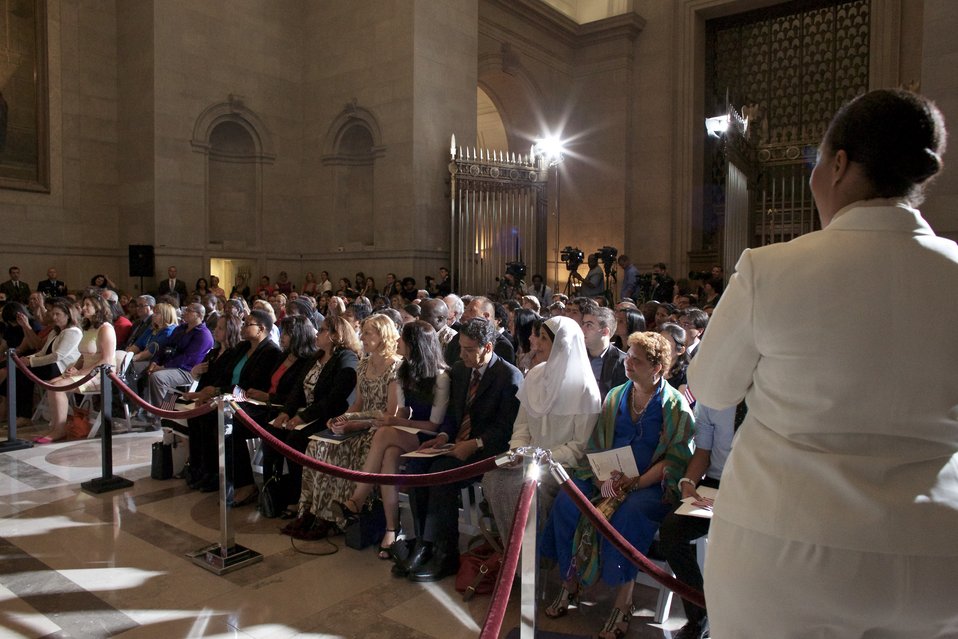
Naturalization Ceremony with Michelle Obama